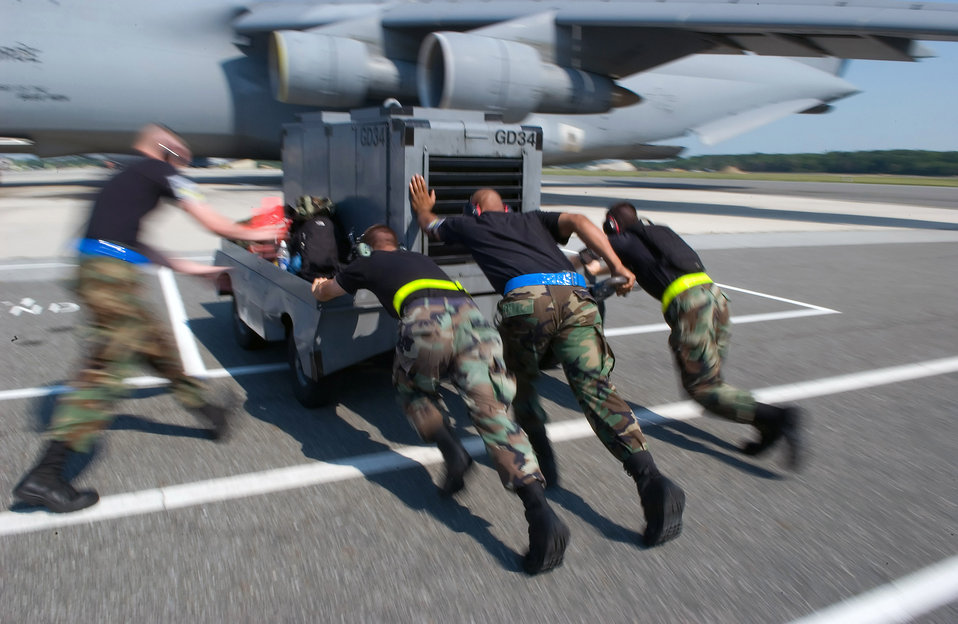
Heave-ho!!

Airmen push a generator into place next to a C-5 Galaxy at Dover Air Force Base, Del. The Airmen are with the 436th Aircraft Maintenance Squadron at Dover AFB.